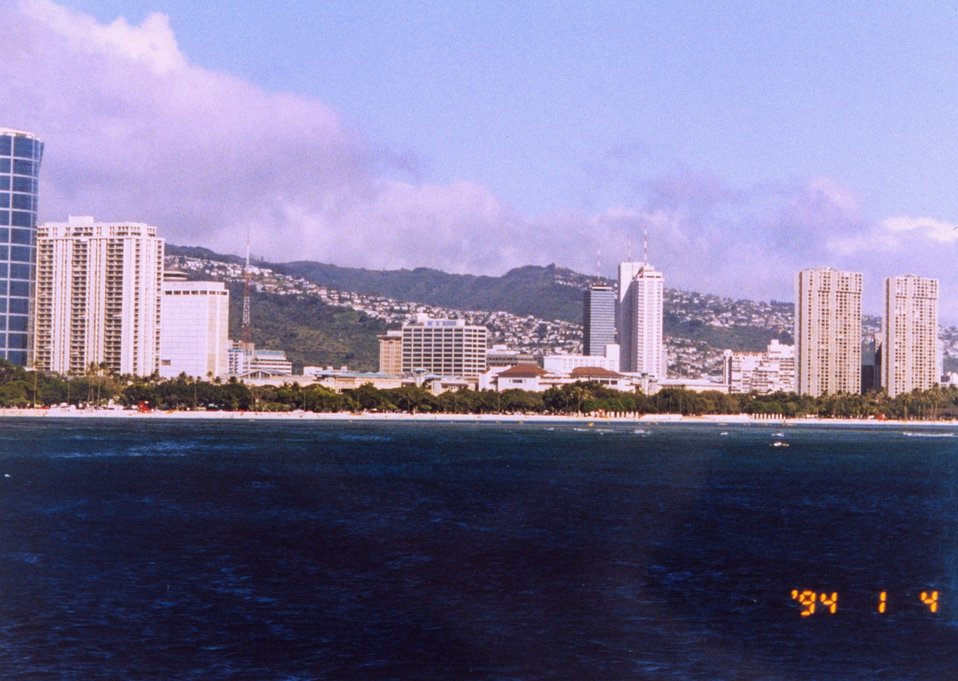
Waikiki hotels as seen from offshore.